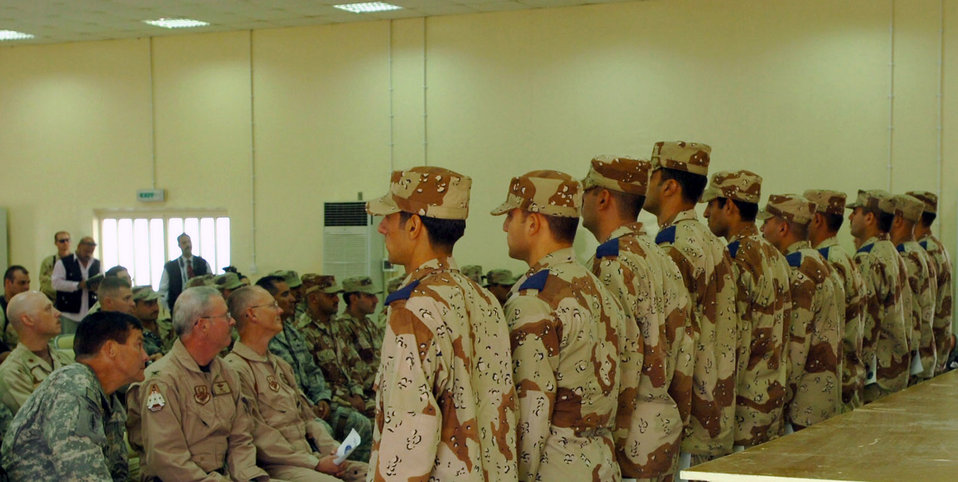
Symbol of tyranny replaced with Iraq air force school

U.S. and Iraqi leaders attend a commissioning ceremony held Sept. 12 following the dedication of the new Iraqi Air Force Training School at Taji Air Base, Iraq. Eleven Iraq second lieutenants were commissioned during the ceremony.